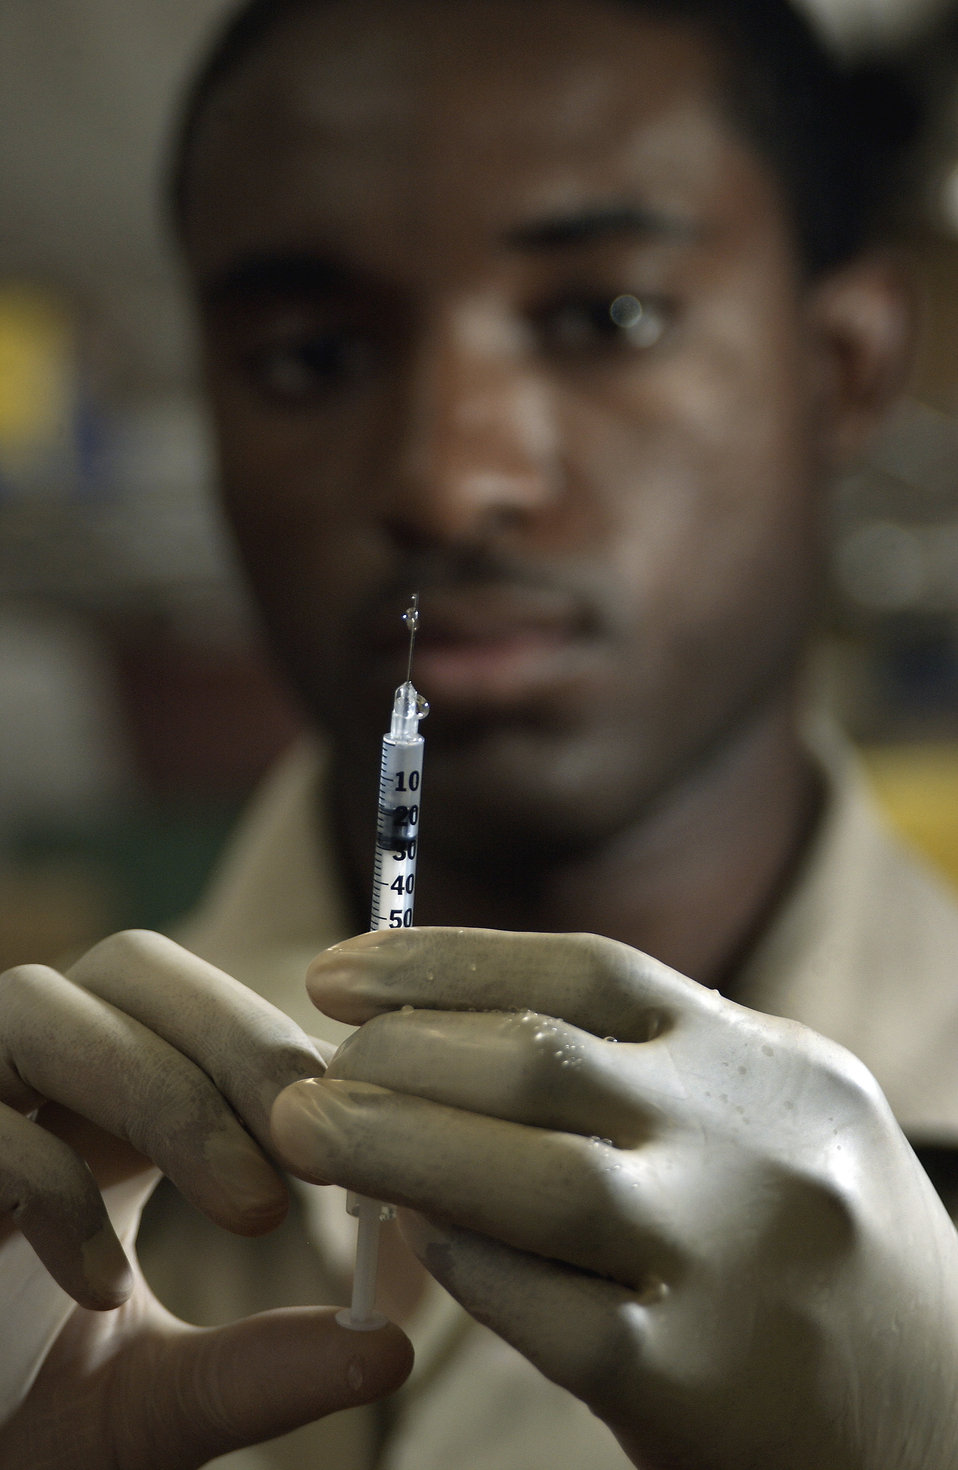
Immunizing airmen

BAGHDAD INTERNATIONAL AIRPORT, Iraq -- Airman 1st Class Arthur Moore prepares a syringe for an anthrax booster shot. Moore and the other medics from the 447th Expeditionary Medical Squadron here administer anthrax and smallpox to an average of 80 patients per week. Moore is a medical technician deployed here from the 96th Medical Operations Squadron at Eglin Air Force Base, Fla.